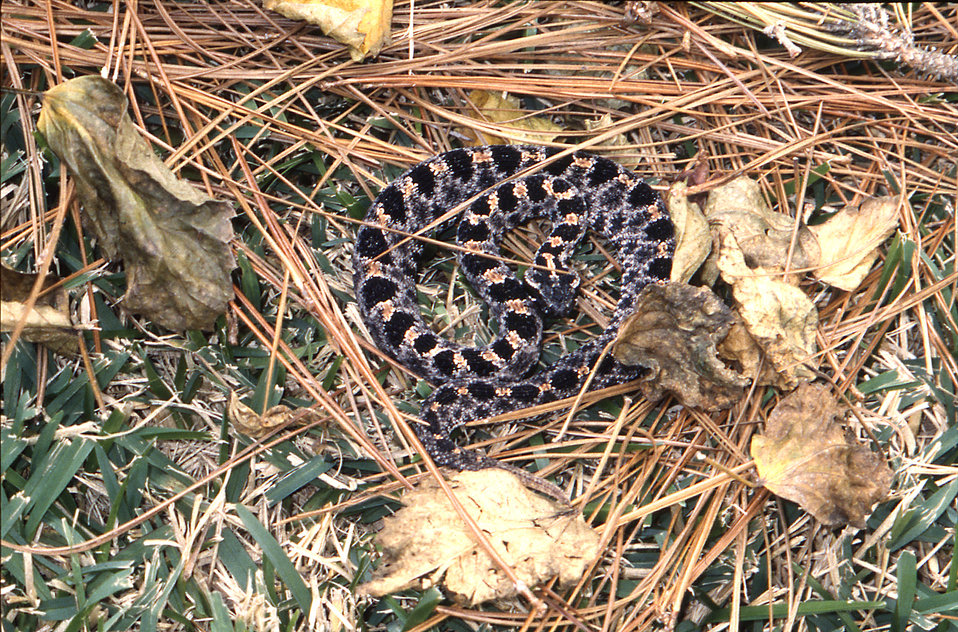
This is a 'dusky pygmy' rattlesnake, Sistrurus miliaris barbouri, the southern counterpart of the 'Carolina pygmy' rattler. It ranges from southern South Carolina, westward across southern Alabama and Mississippi, and south throughout the state of Florida (Connant, 1975). Superficially resembling the Carolina subspecies, it often has a dusted appearance due to the diffuse black mottling in the ground color.Throughout its range, the dusky pygmy rattlesnake inhabits the pine flatwoods, moist prairies and virtually any type of other habitats that offer sufficient cover and are in close proximity to wetlands (Tennant, 1998). Dense populations of this little rattlesnake can be found in many areas of Florida, especially in the moist prairies around the everglades (Tennant, 1998). Dusky pygmy rattlesnakes are one of the species that will readily invade towns and buildings with hurricanes and/or floods, making it an important snake to recognize by first-responders.